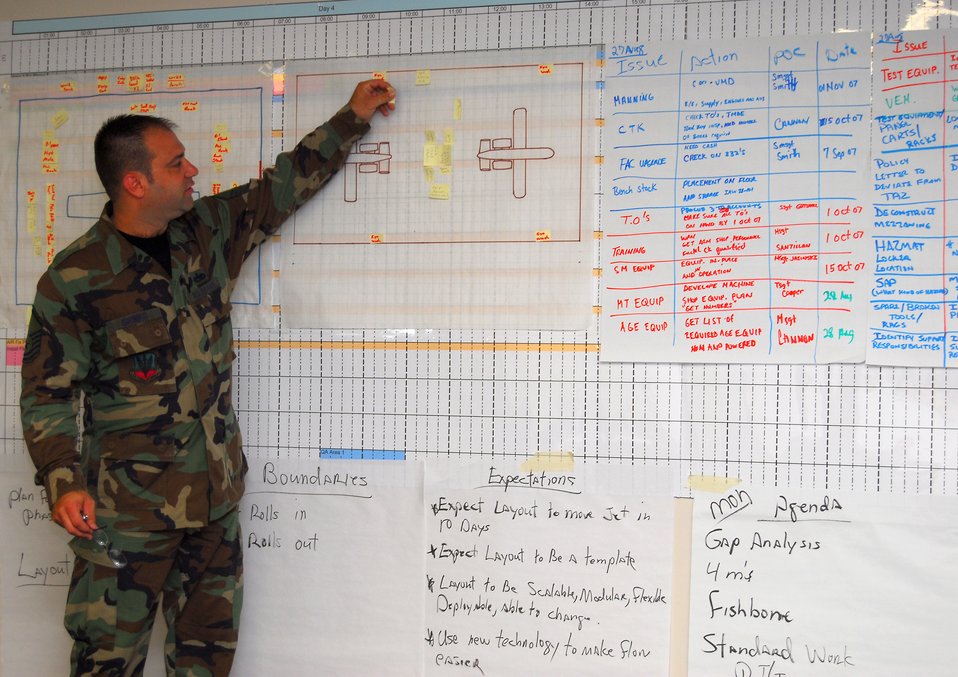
Moody Airmen use AFSO 21 to get it right the first time

Master Sgt. Steven Grimes places a tool marker on a floor plan for the new A-10 phase dock Aug. 29 at Moodt Air Force Base, Ga. Members of the 23rd Wing and outside consultants gathered to perform a process improvment evaluation on the phase section. Sergeant Grimes is assigned to the Air Combat Command A-10 maintenance depot liaison.